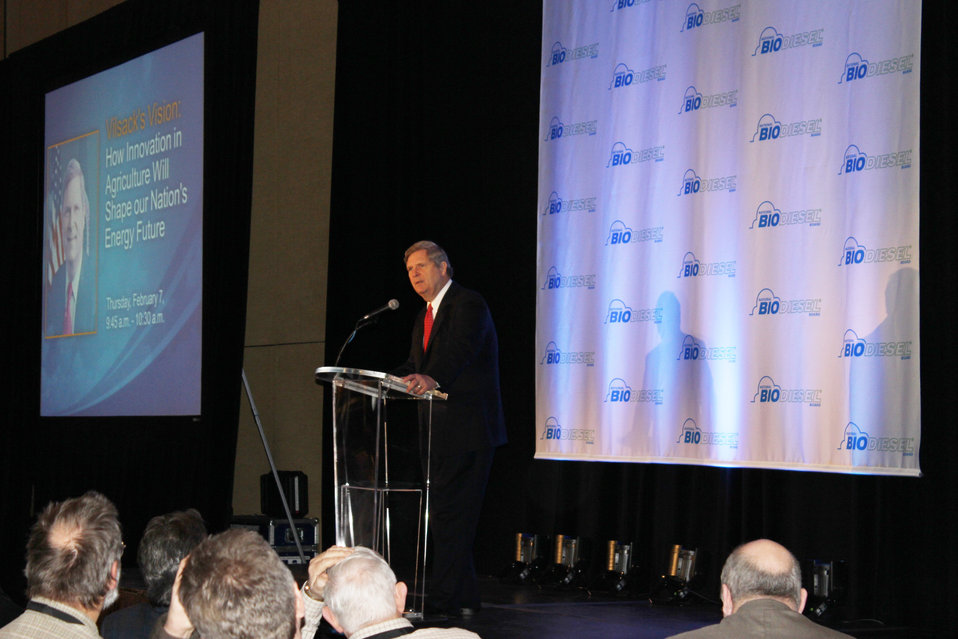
Agriculture Secretary Tom Vilsack speaks at the National Biodiesel Conference in Las Vegas, NV on Feb. 7, 2013. Secretary Vilsack discussed the unlimited opportunity for America to produce more homegrown energy through the development and innovation of advanced biofuels and the significant contributions biofuels and other biobased products have made to America’s economic and energy security, as well as the importance of supporting the industry through research, investment and increased collaboration.